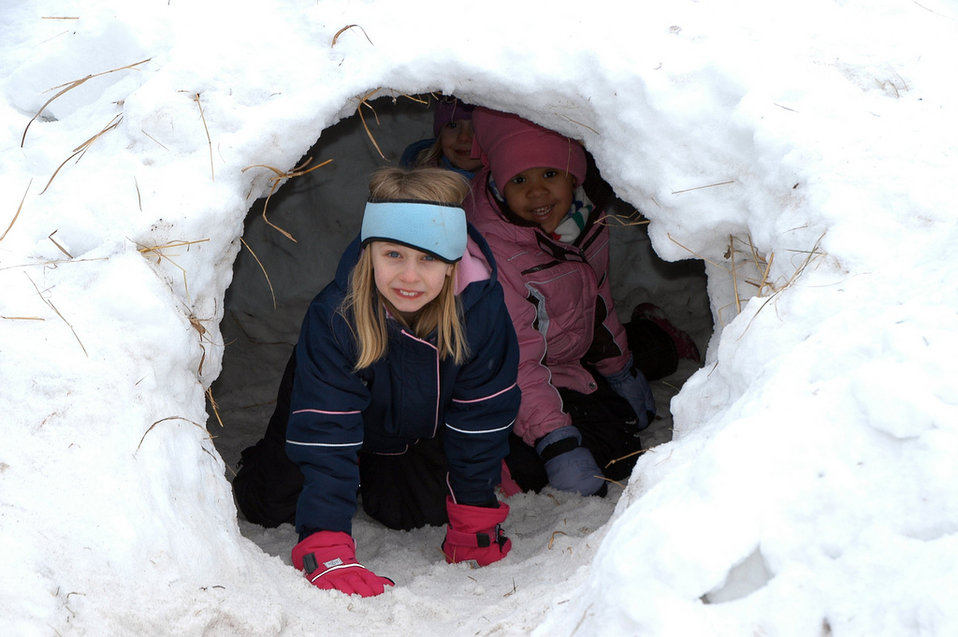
Snow cave

At Sherburne National Wildlife Refuge, MN.